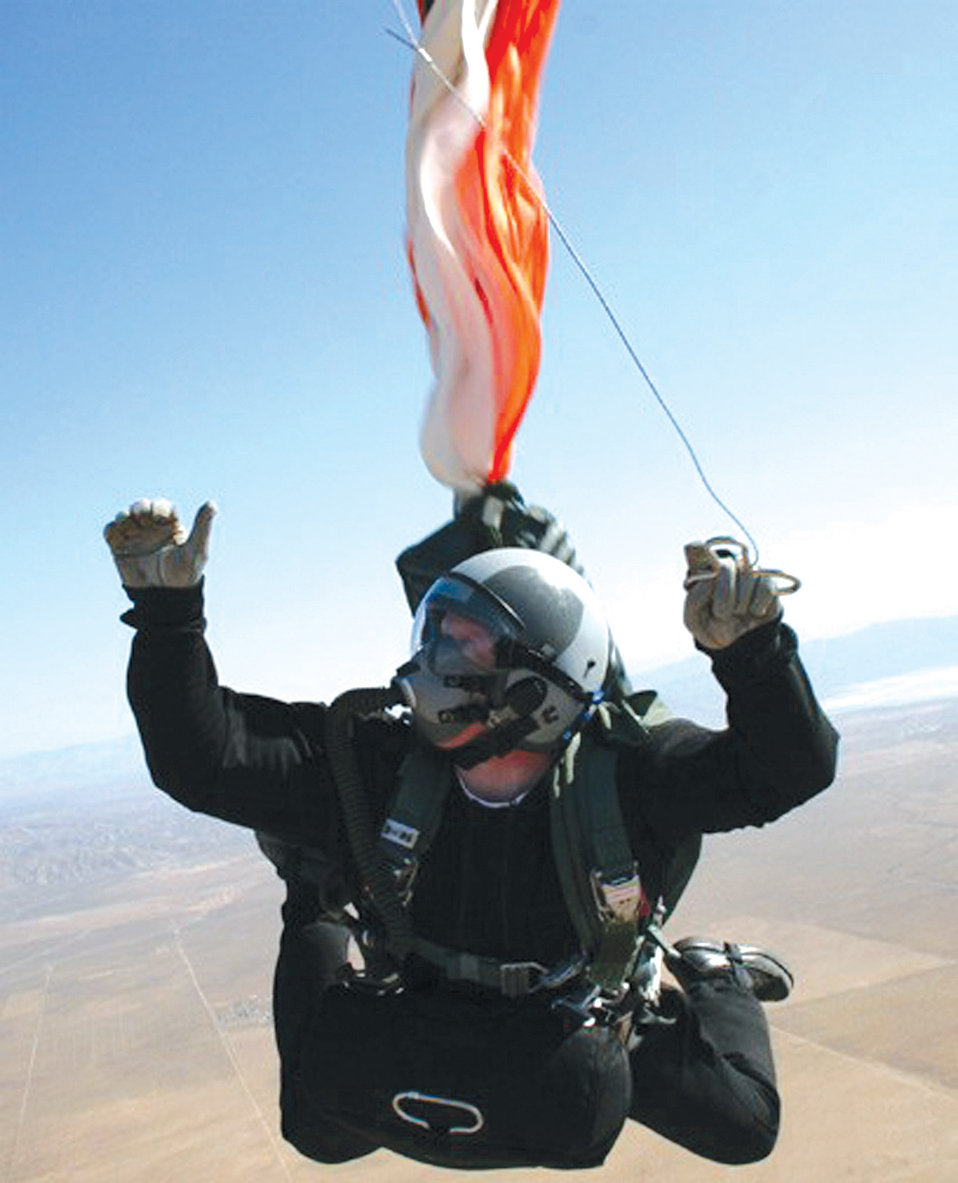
Test parachutists jump to conclusions

Staff Sgt. Scott Lawrence deploys his parachute during a practice jump over Edwards Air Force Base, Calif., on Tuesday, May 23, 2006. He is assigned to the 418th Flight Test Squadron's test parachutist program.